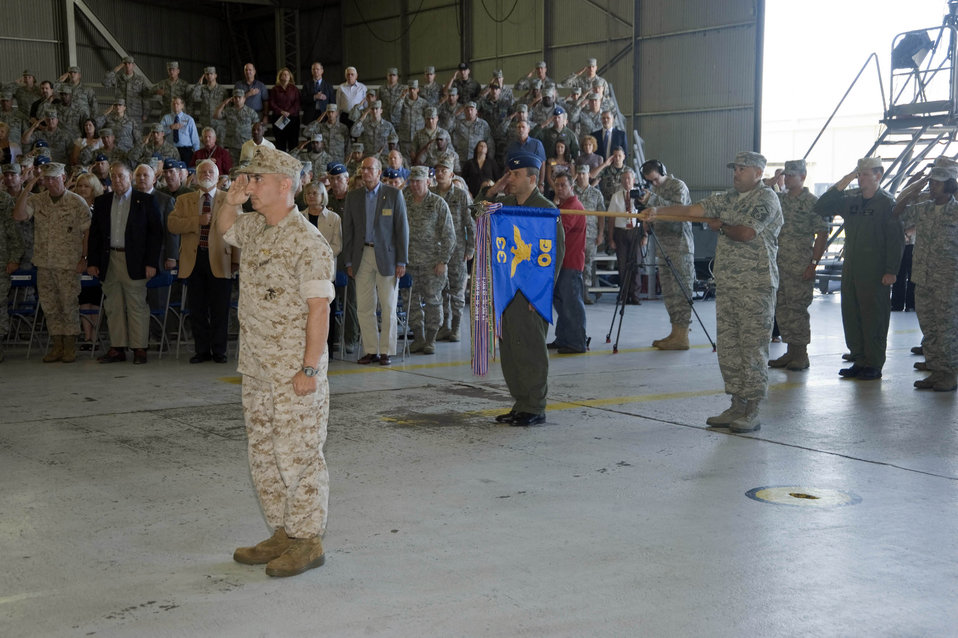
Eglin wing transitions to become first F-35 training unit

Marine Col. Arthur Tomassetti and two flights under his command at the redesignation ceremony marking the standup of the Air Force's first F-35 Lightning II joint strike fighter training unit Oct. 1, 2009, at Eglin Air Force Base, Fla. The 33rd Fighter Wing now align under Air Education and Training Command and will be responsible for training pilots and mechanics on the F-35. Colonel Tomassetti is the 33rd Fighter Wing vice commander.